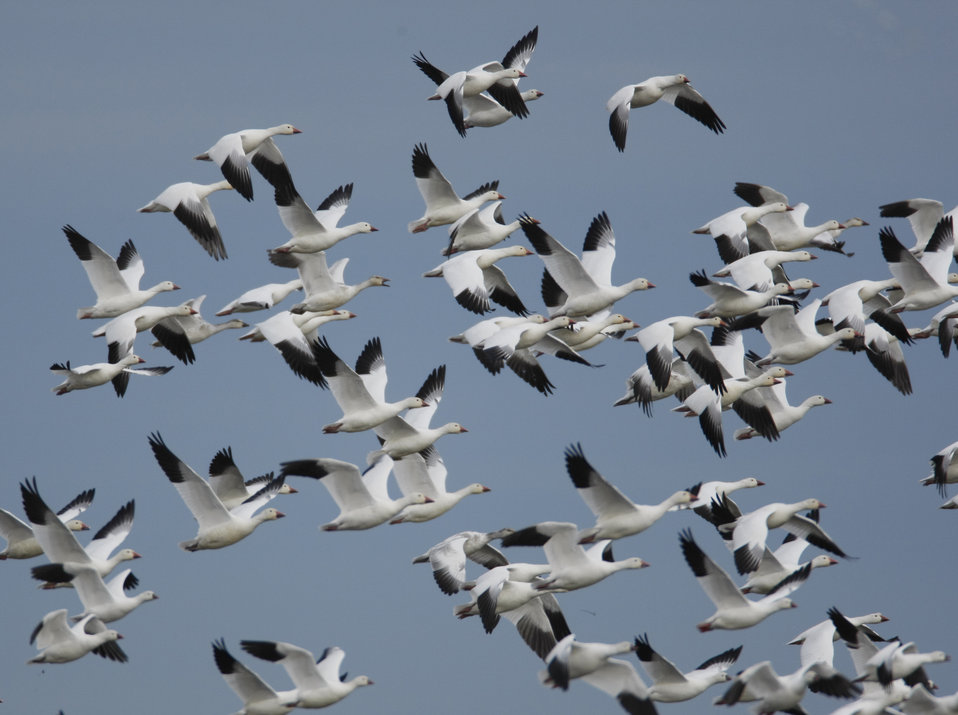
snow geese and Ross' geese

Sacramento National Wildlife Refuge, CA
Photo: Steve Emmons, USFWS

Snow Geese (Chen caerulescens) & Ross's Geese (Chen rossii)
Auto tour, Sacramento NWR, Willows, CA